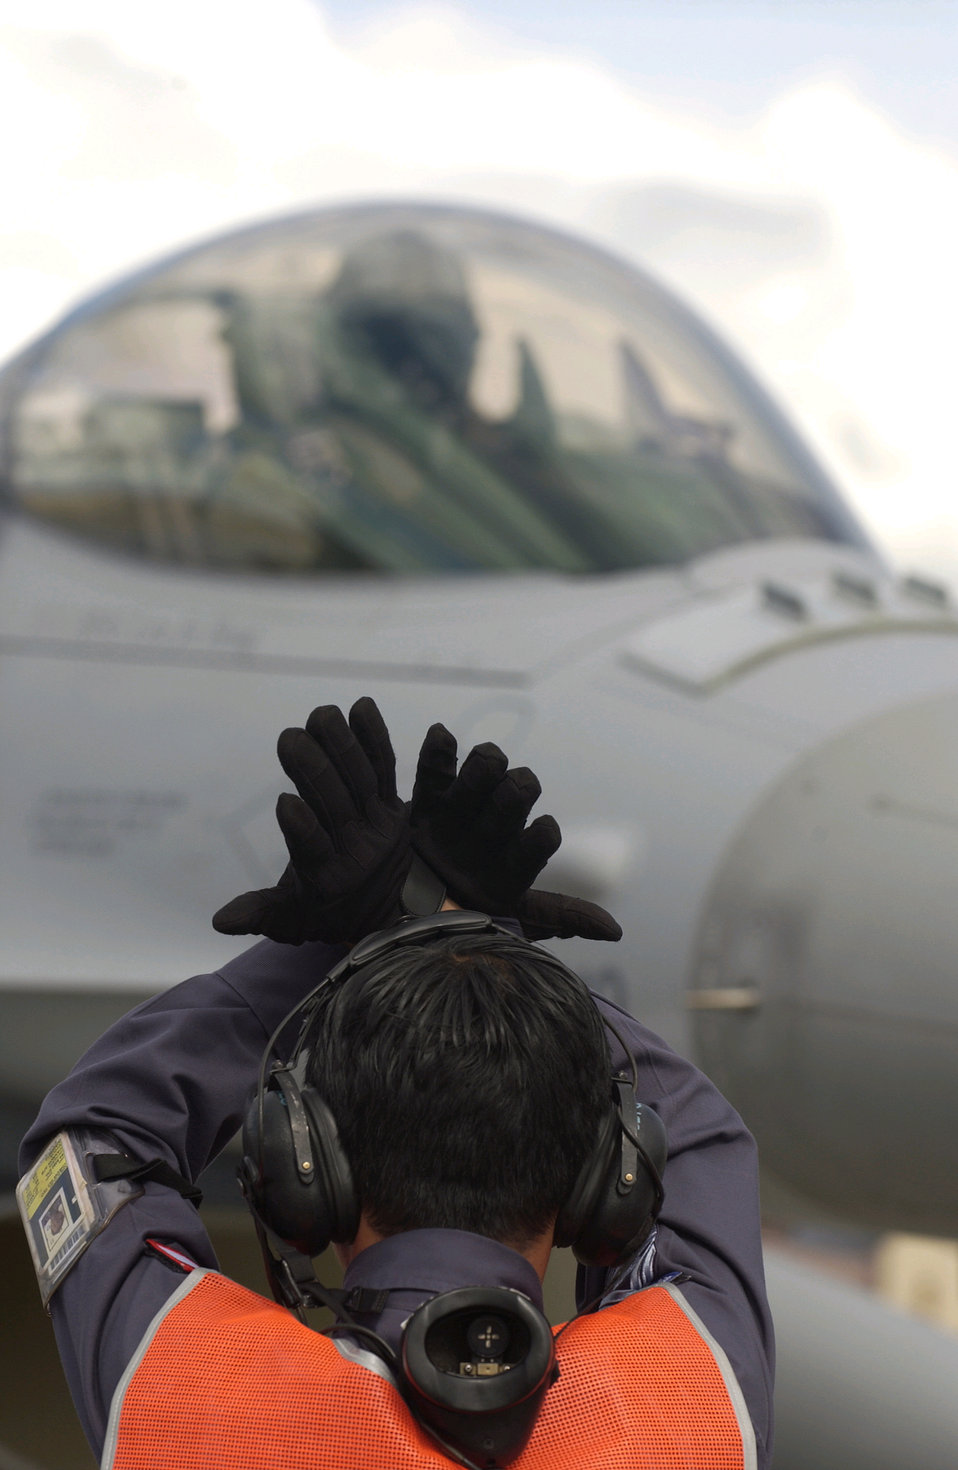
Working together

EIELSON AIR FORCE BASE, Alaska -- A Singapore crew chief training with the 428th Fighter Squadron from Cannon Air Force Base, N.M., marshals out an F-16 Fighting Falcon before taking off on a mission during Cooperative Cope Thunder here July 28.